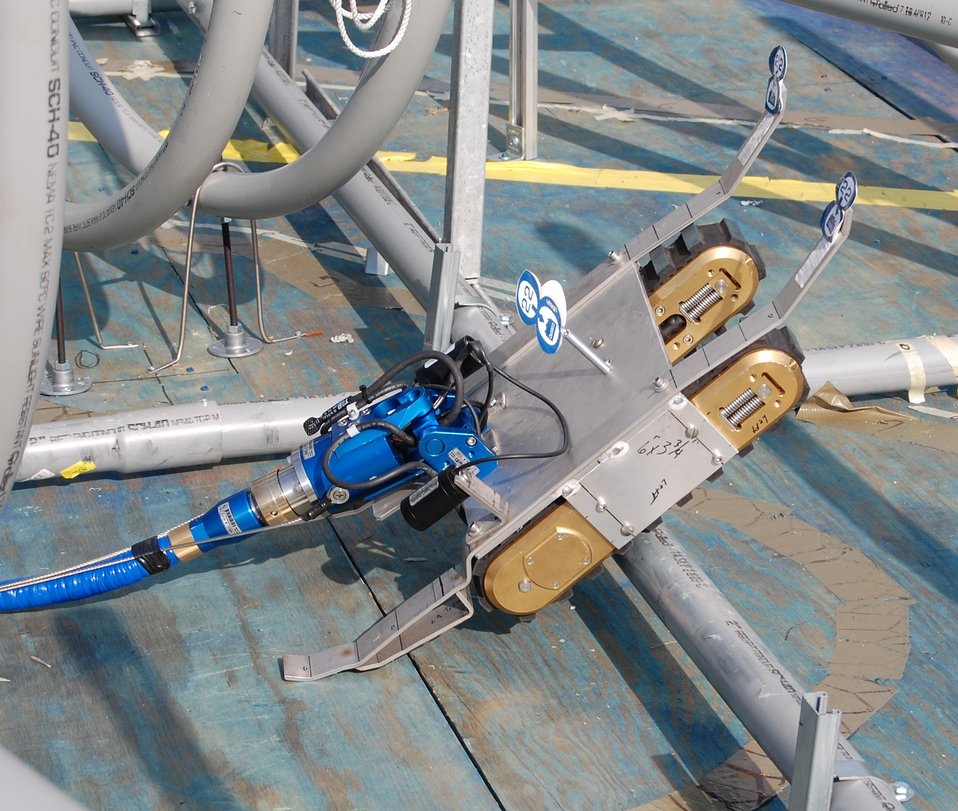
Tizzy - motorized robotic crawler

“Tizzy,” pictured here, is a motorized robotic crawler being used by Savannah River Remediation (SRR) LLC to assess and clean remaining waste material inside large underground liquid waste storage tanks.